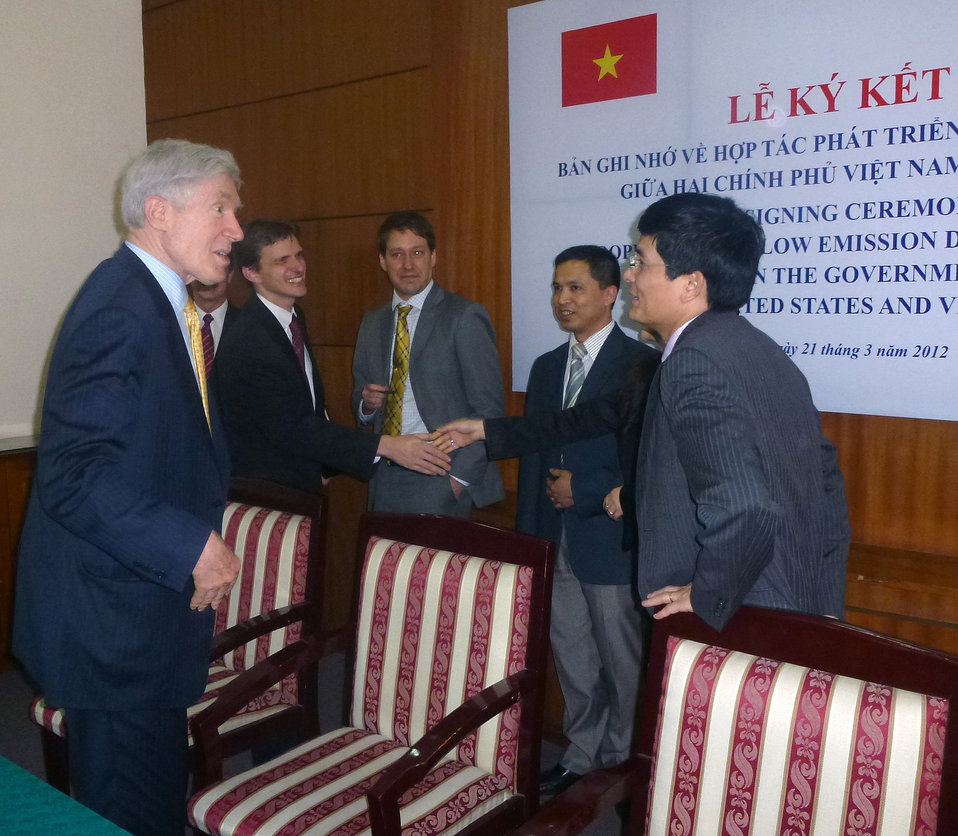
U.S.-Vietnam MOU on Low Emissions Development Strategies Signing Ceremony